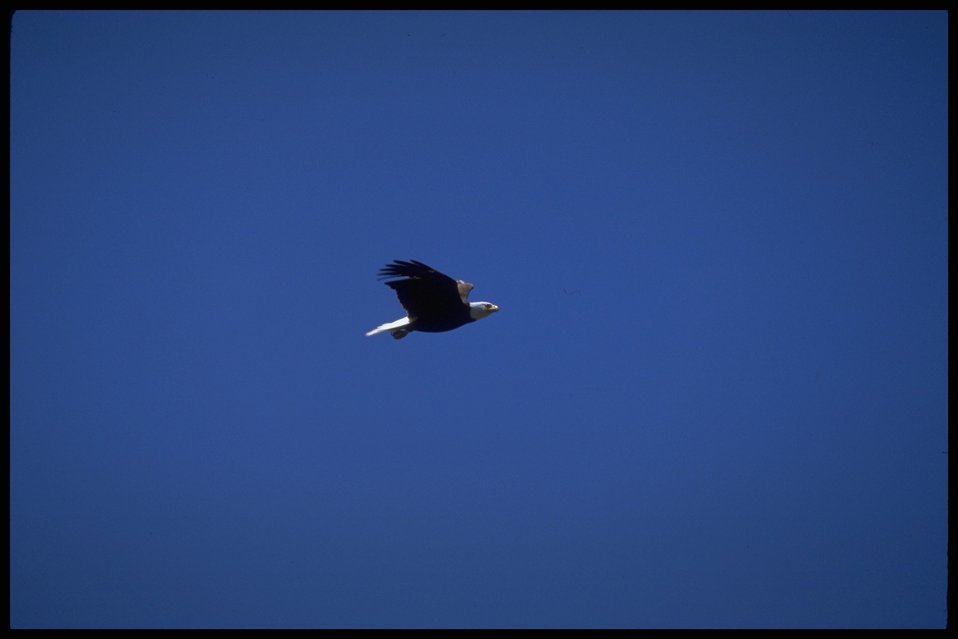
Far shot of Bald Eagle in flight. Lakeview District.